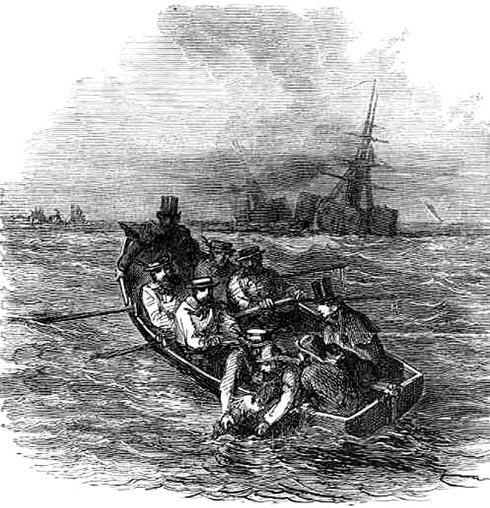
Great Expectations, Magwitch is arrested after his capture on the river Thames when trying to be spirited away to France, by John McLenan. Français : Les Grandes Espérances : Magwitch est arrêté sur la Tamise lors de sa tentative d'évauation vers la France, par John McLenan.